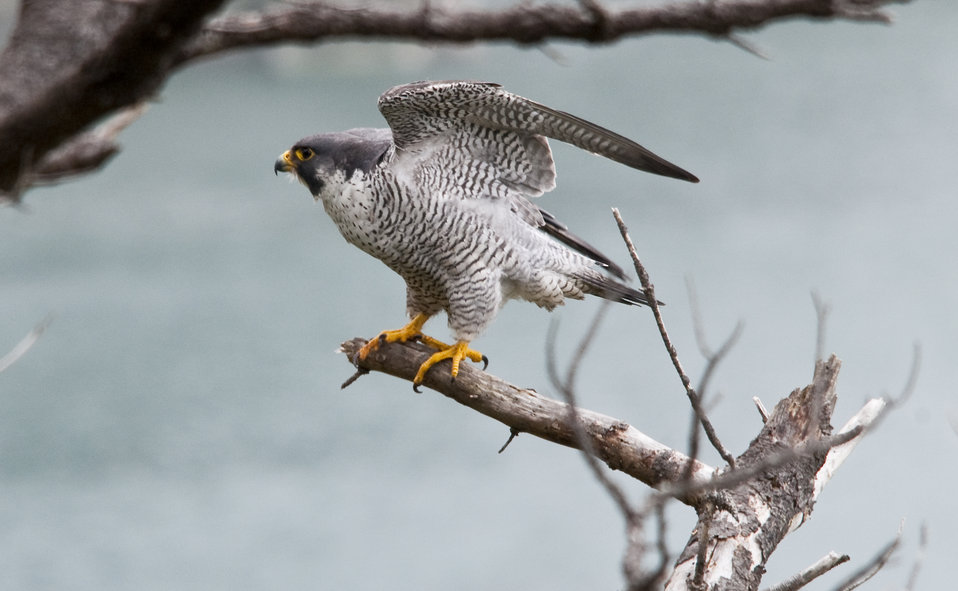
Male Peregrine Falcon

Peregrine Falcons nest within Oregon Islands, Three Arch Rocks, and Cape Meares National Wildlife Refuges, OR.